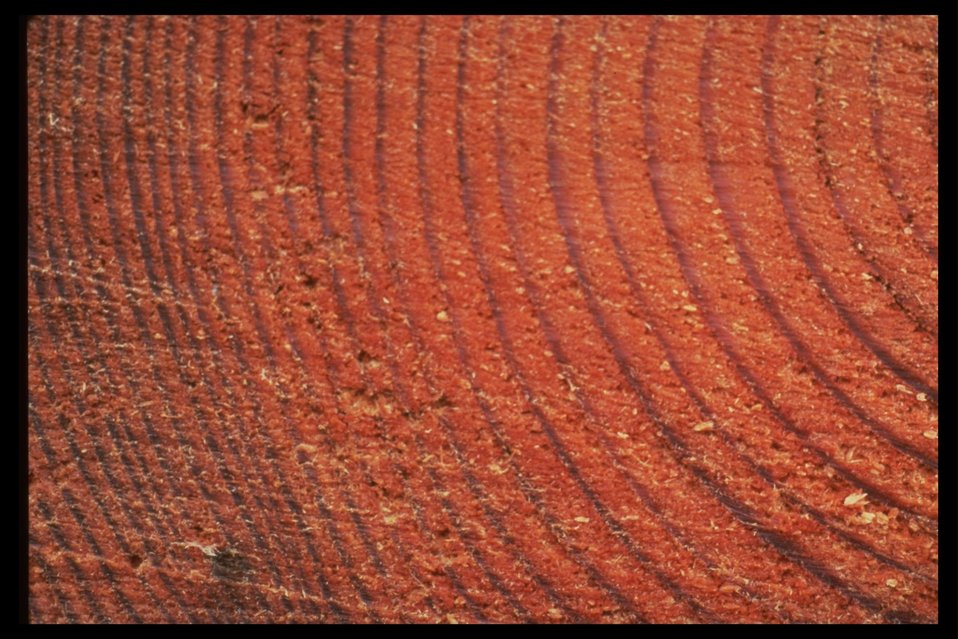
End of log, showing the tree rings and the texture of the wood.